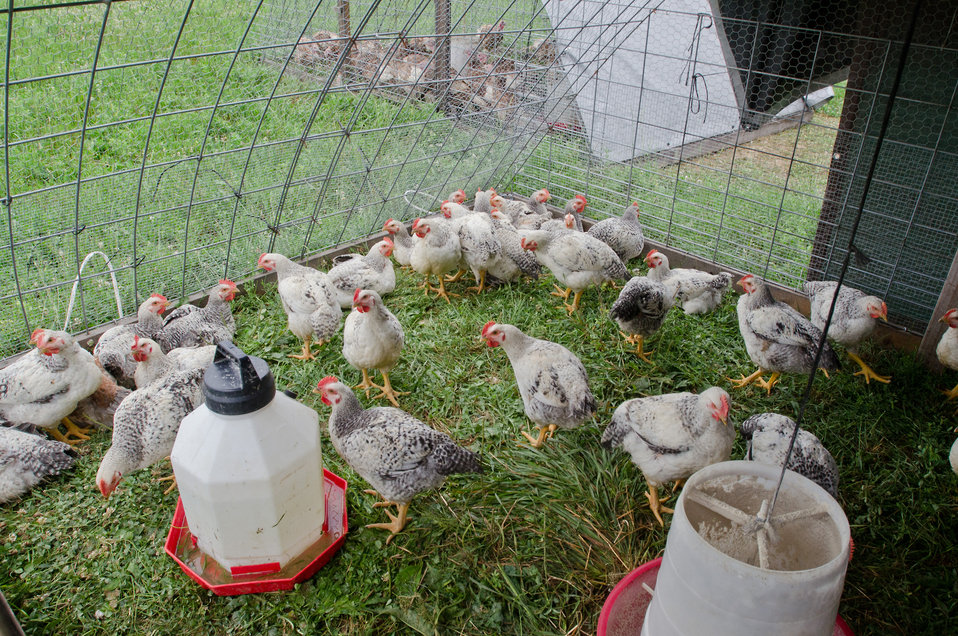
Broiler chickens graze on organic pastures and live in pens that protect them from predators, direct sun light, and wind at Nick’s Organic Farm, owned by Nick Maravell in Adamstown, MD on Friday, July 12, 2013. The enclosures are light enough to be moved by hand, each day, one consecutive section at a time. This allows the pasture to easily recover from the grazing. The farm produces Black Angus beef, chicken, turkey, eggs, hay, soybeans, corn, alfalfa, orchard grass, rye; and other crops. The cattle are100% grass-fed receiving certified organic pasture, certified organic hay (in winter), water and mineral salts mixed with sea kelp. The cattle are not fed hormones, antibiotics or animal products. Poultry feed from grain is ground from organic grain. The poultry also graze on organic pastures. The farm has conducted on-farm research with federal, state and non-profit agencies to refine organic practices. An organization such as the U.S. Department of Agriculture (USDA) Agricultural Research Service (ARS) center in Beltsville has been able to conduct research to improve organic crops and to breed and manage the cattle so that they have.